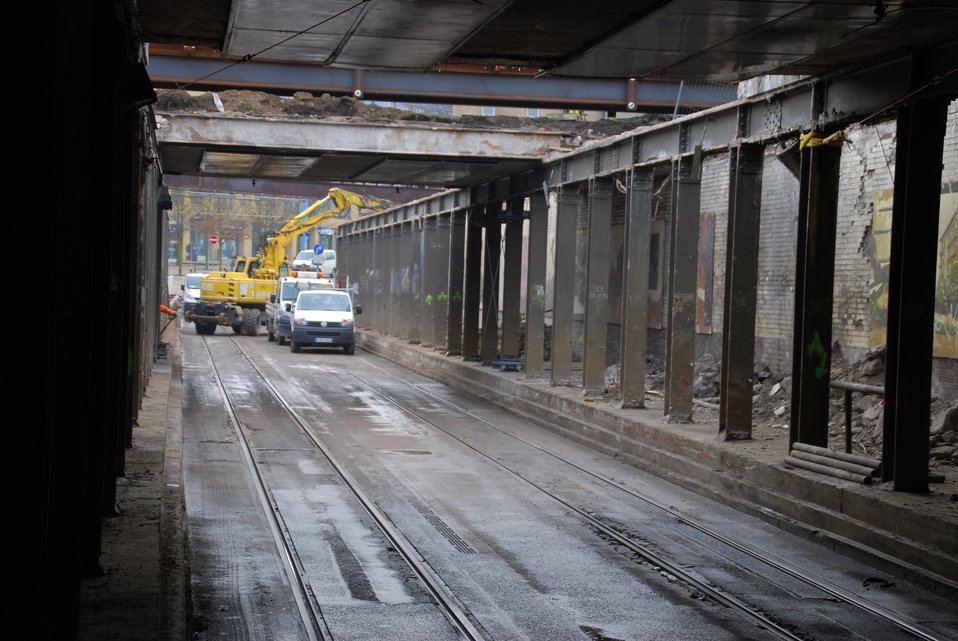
Abriss Bahnhofstunnel Frankfurt (Oder)